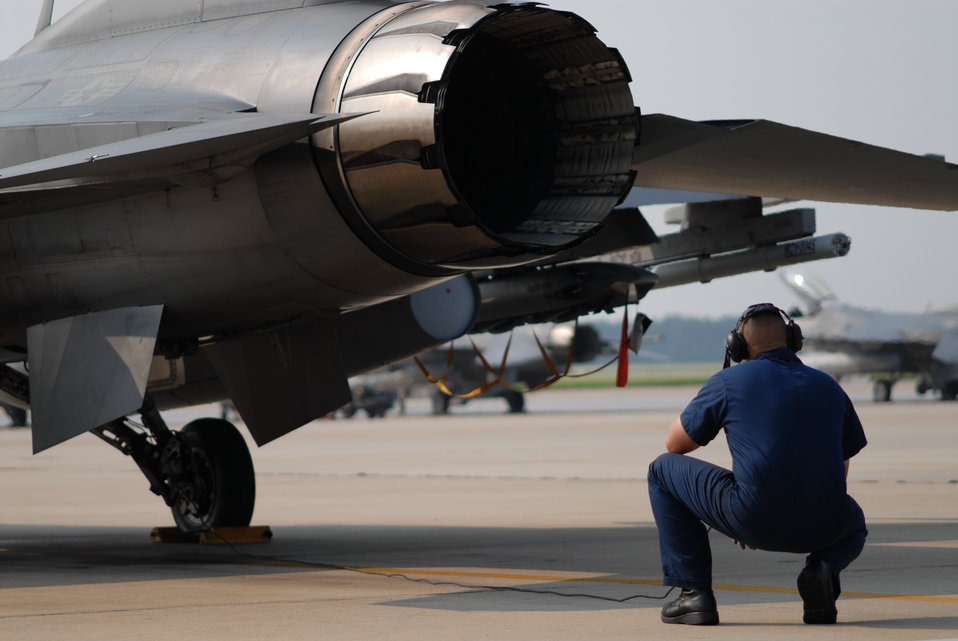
Dynamic Weasel keeps pilots sharp

Staff Sgt. Brian Gaylor does a pre-flight check of an F-16 Fighting Falcon before a mission in support of Operation Dynamic Weasel on Thursday, June 29, at Shaw Air Force Base, S.C. The exercise features various aircraft imitating combat operations in Southwest Asia. Sergeant Gaylor is a crew chief with the 77th Fighter Squadron.